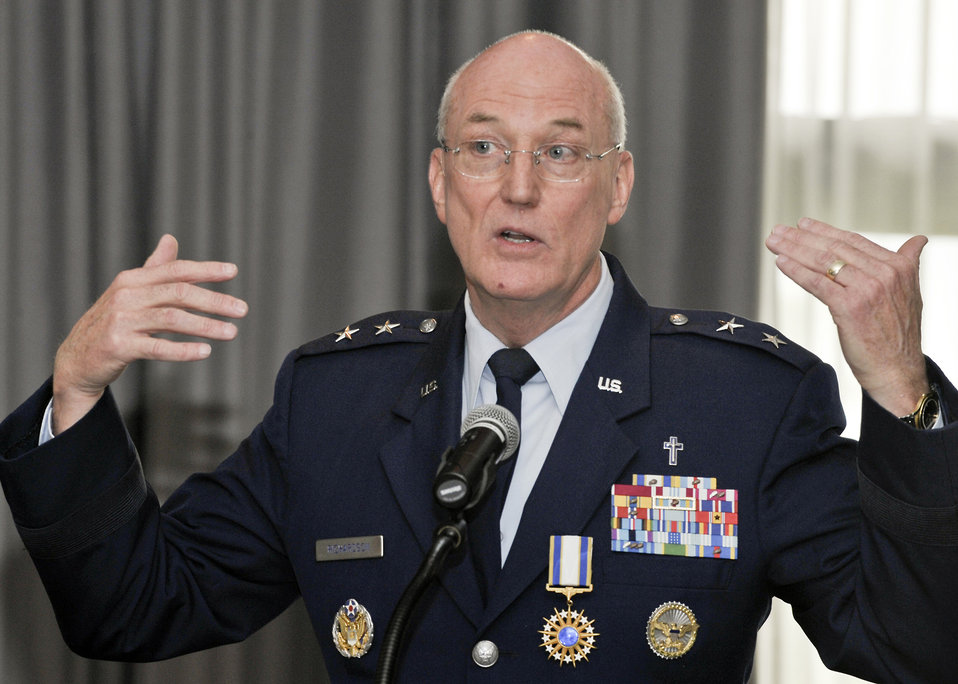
Top Air Force chaplain retires after 40-year career

Maj. Gen. Cecil Richardson reflects on his nearly 41-year career during his retirement ceremony April 30, 2012, at Joint Base Anacostia-Bolling, Washington, D.C. Air Force Chief of Staff Gen. Norton Schwartz hosted the event. Richardson was the Air Force chief of chaplains.